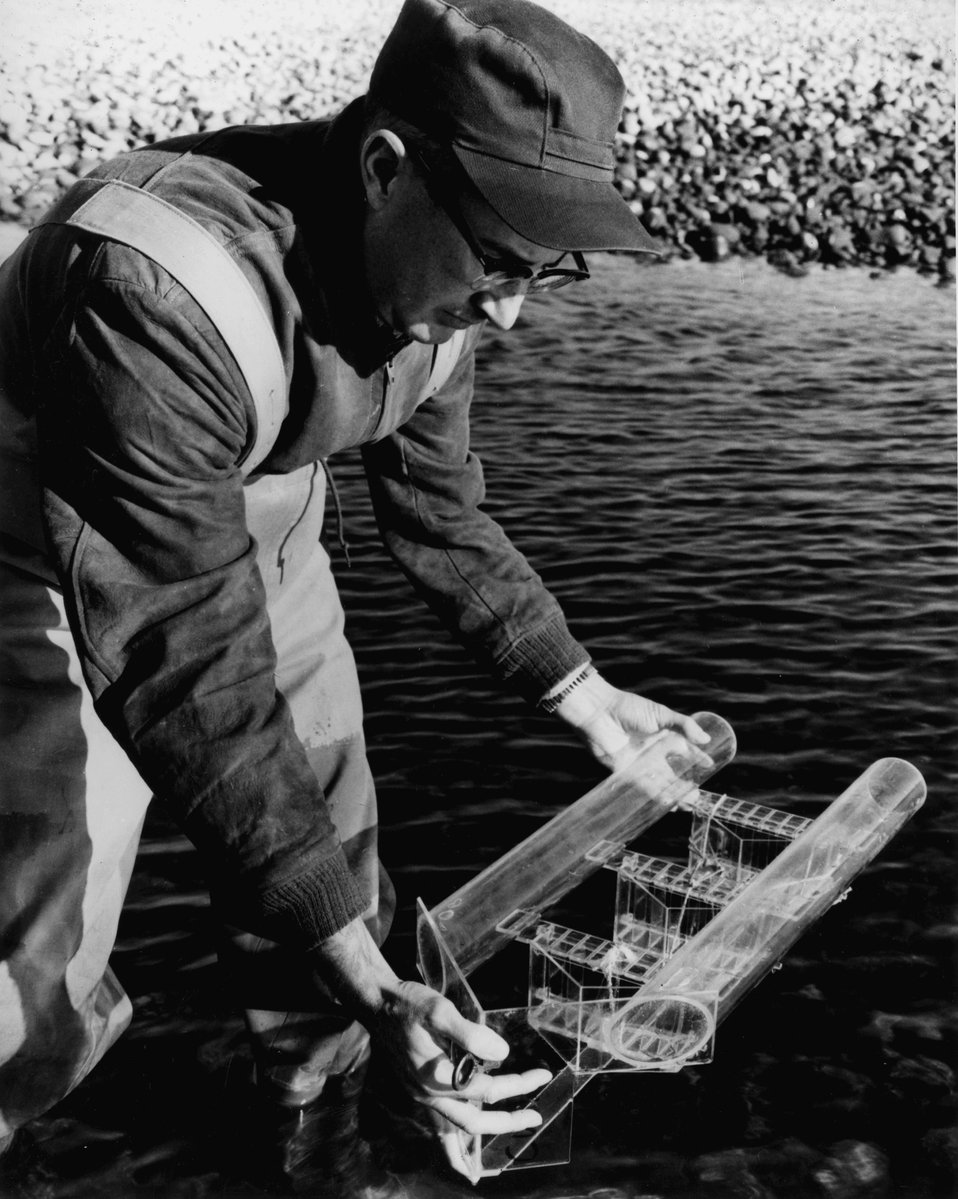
Studies are carried on continuously at the AEC's Hanford Project to determine if there are any effects on the Columbia River or the aquatic organisms which live in the river. c. 1968